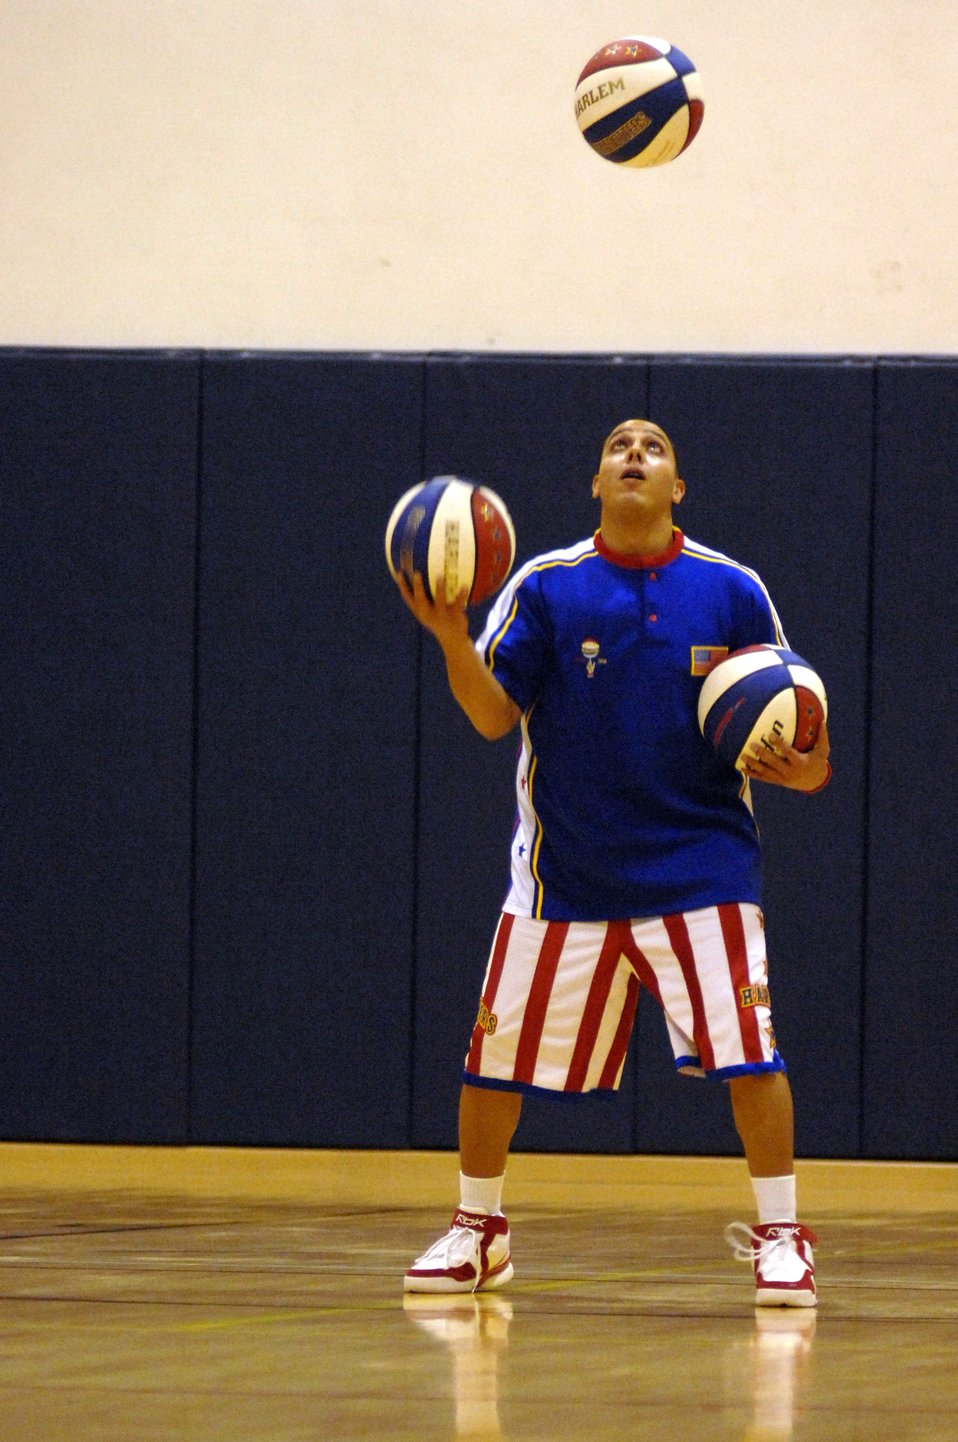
Harlem Globetrotters share the magic